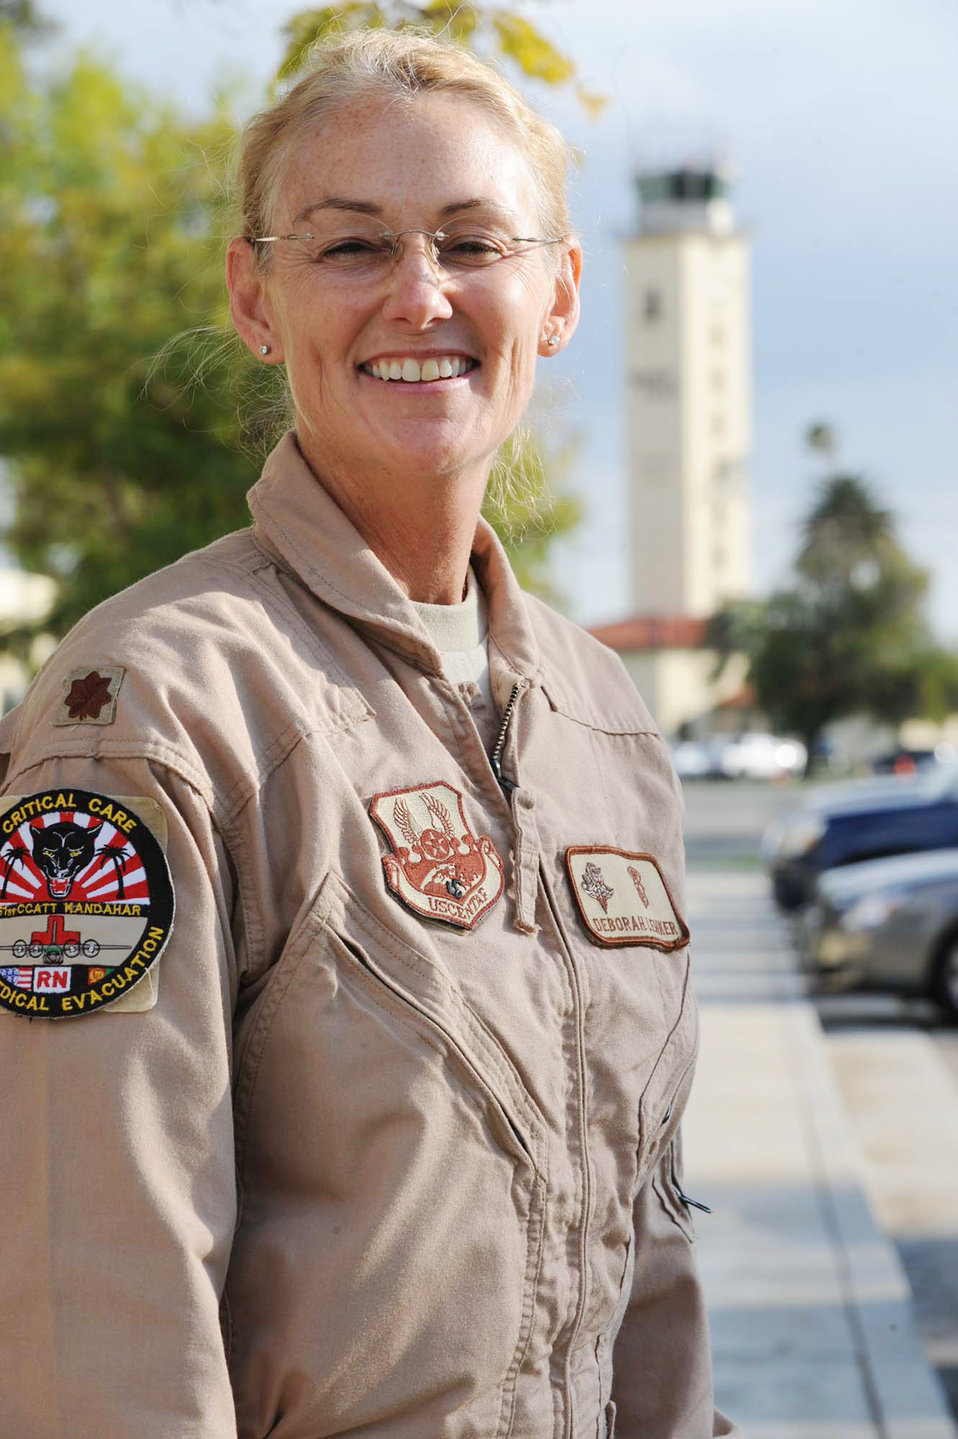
Memories of 6-month Afghanistan tour linger for Reserve nurse

Maj. Deborah Lehker returned from a six-month deployment to Afghanistan as a nurse with a critical care transportation team March 10, 2010, at March Air Reserve Base, Calif.